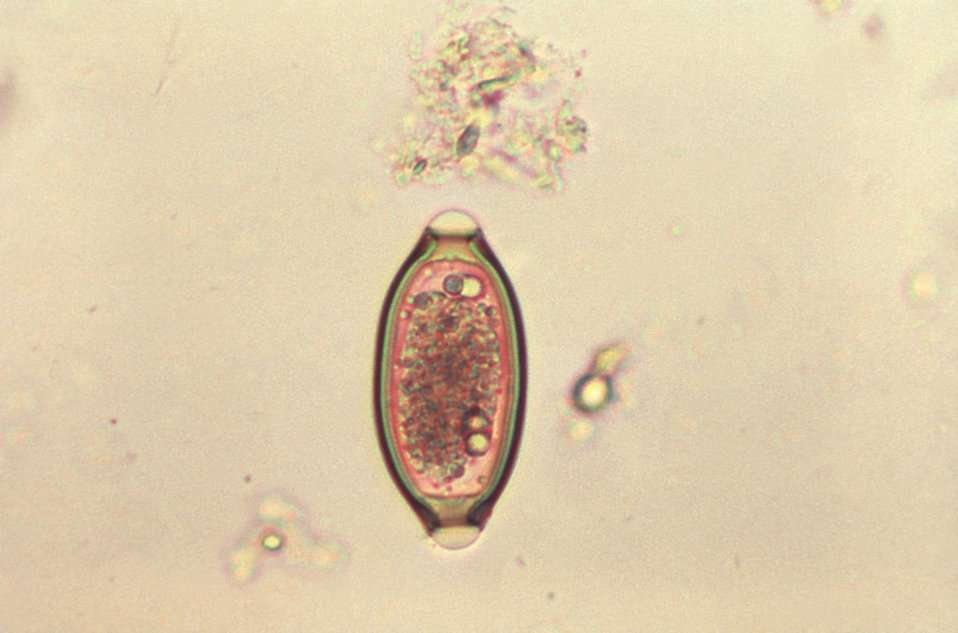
This micrograph depicts an egg from the 'human whipworm', Trichuris trichiura, the causal agent of 'Trichuriasis'.